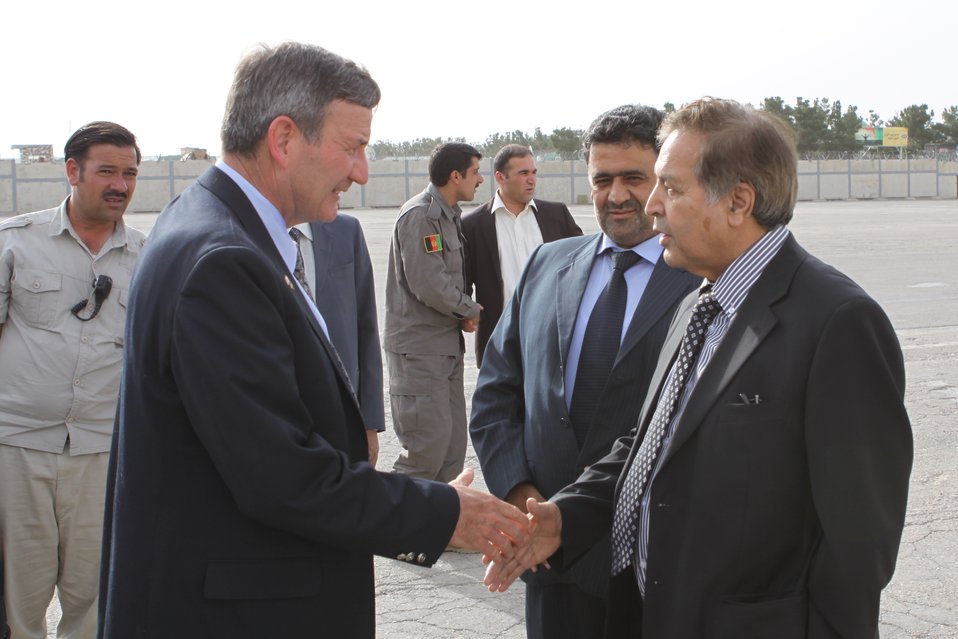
100525 Hirat Marble Conference 889